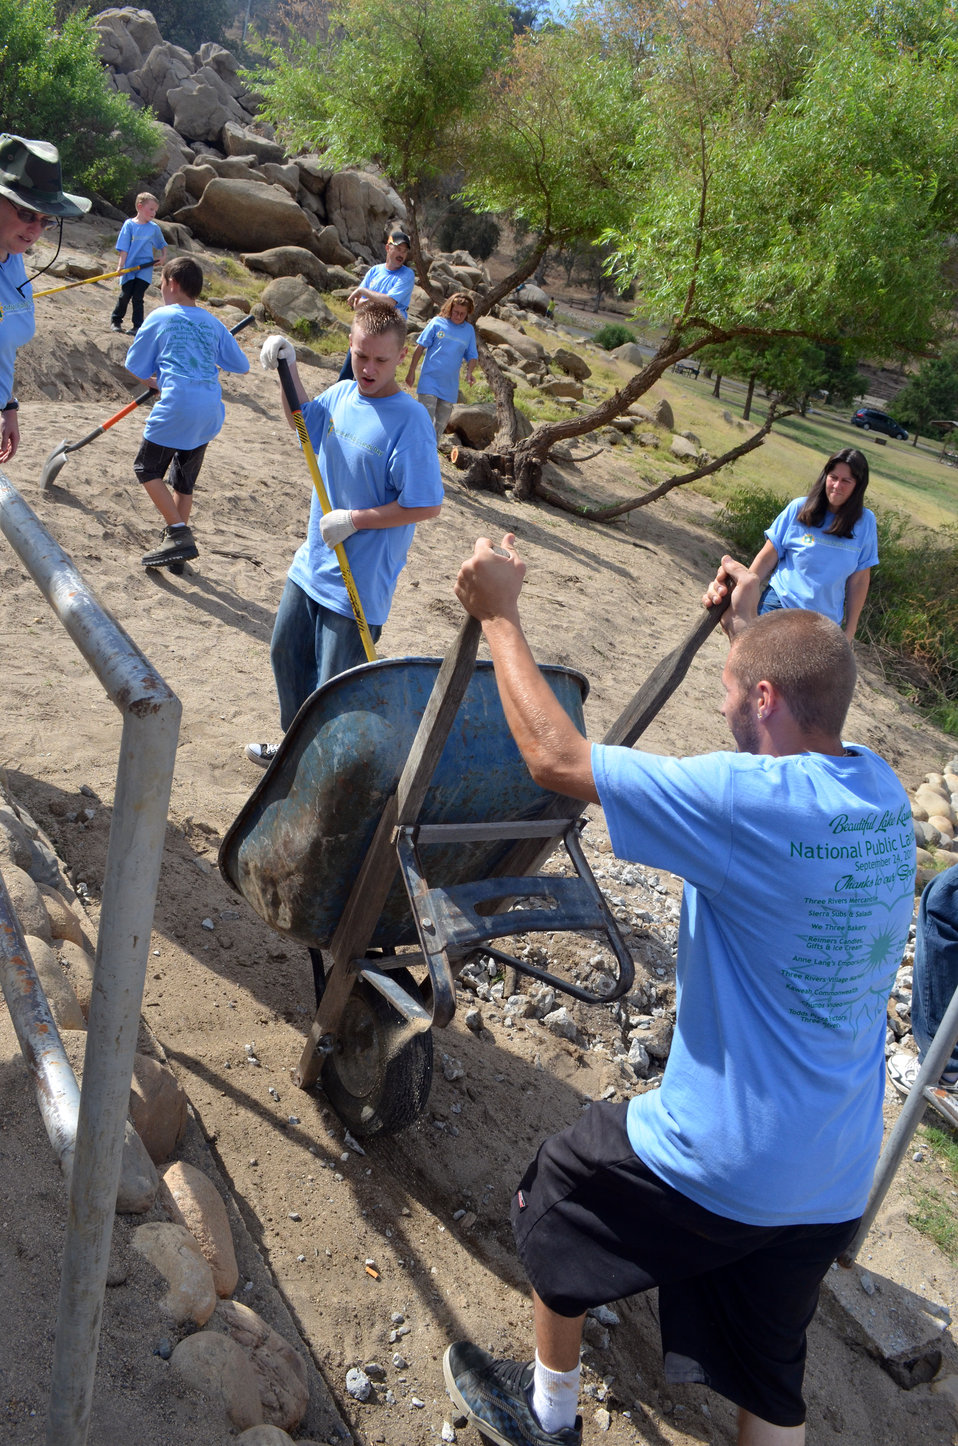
National Public Lands Day at Lake Kaweah

Volunteers from Boys Scout Troop 274 work on a walkway at Lake Kaweah near Lemon Cove, Calif., Sept. 24 in celebration of National Public Lands Day. Around 100 volunteers turned out to help at Lake Kaweah, one of seven U.S. Army Corps of Engineers Sacramento District recreation parks that participated in the event.